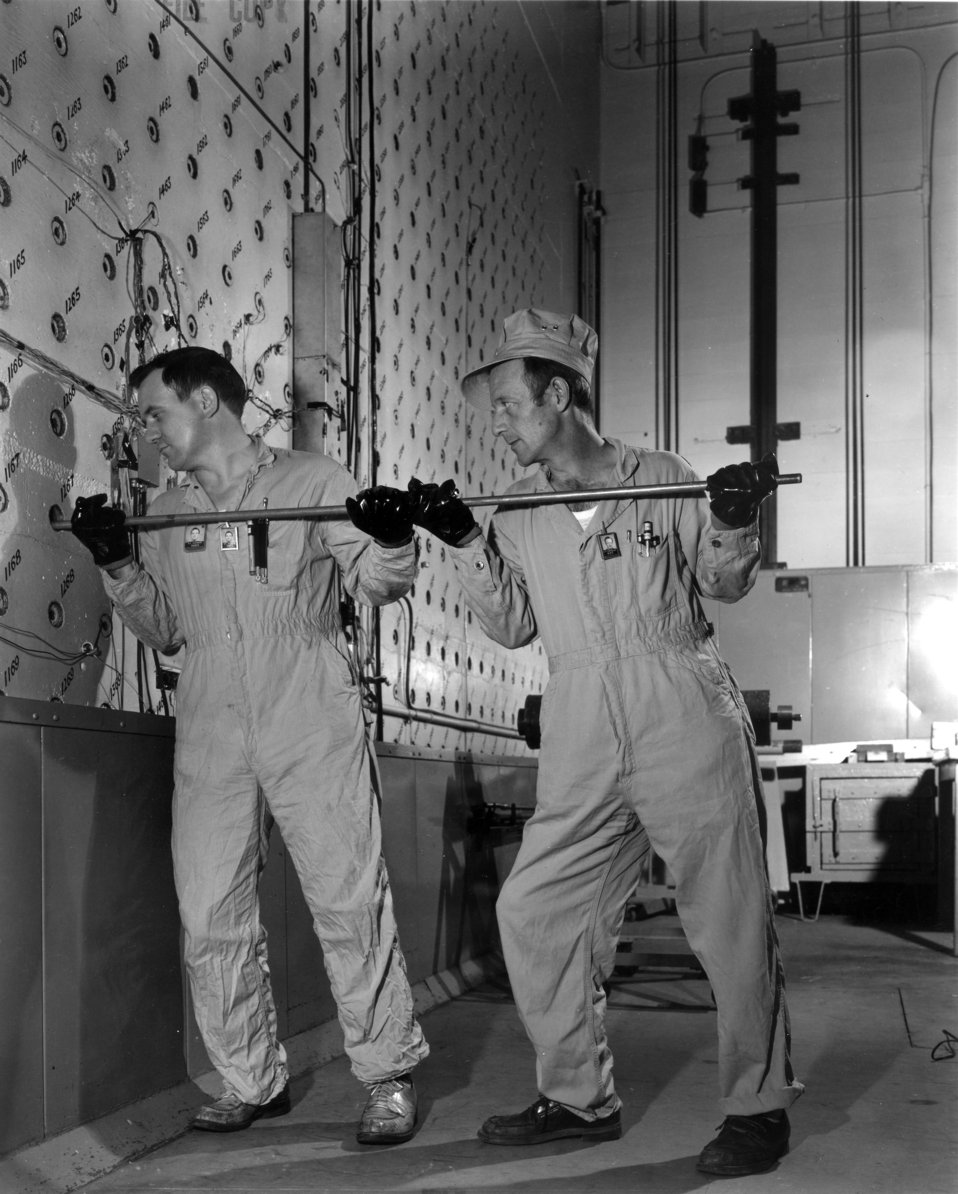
Loading Face Graphite Reactor ORNL

7578-2 DOE photo Ed Westcott 1-2-1952 Oak Ridge Tennessee